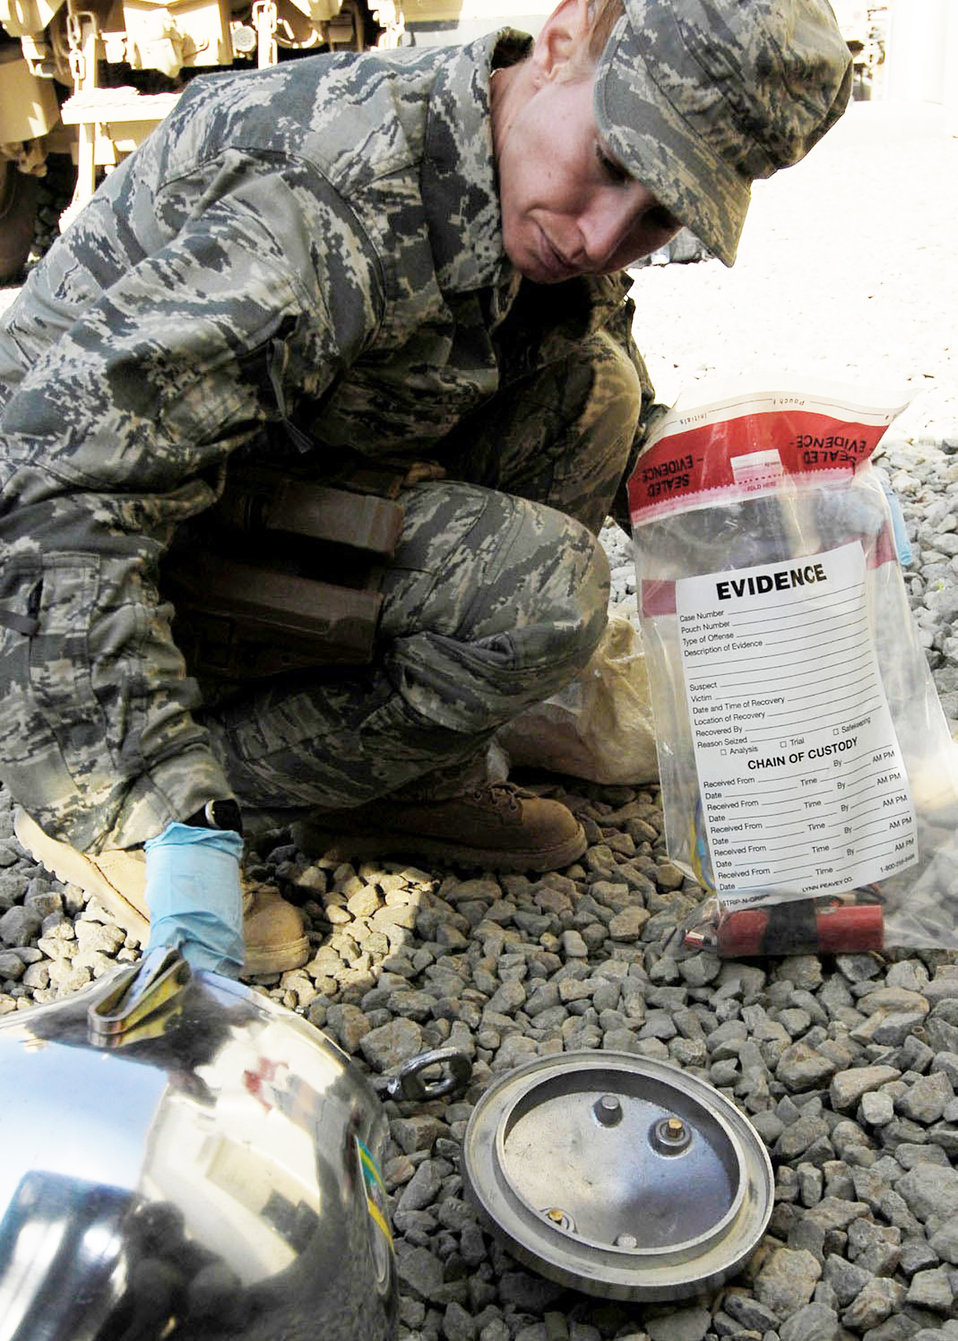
The weapons of warfare adapt with the age of Airmen

Staff Sgt. Elizabeth Spradley, an explosive ordnance disposal technician at Bagram Airfield, Afghanistan, collects evidence from a mock improvised explosive device during training Oct. 26, 2009. EOD teams use robots during missions to disarm IEDs and look for additional IEDs while ensuring coalition safety when dealing with IEDs. Sergeant Spradley is a joint expeditionary tasked Airman attached to the 741st EOD Battalion. She is an Albuquerque, N.M., native deployed from Spangdahlem Air Base, Germany.